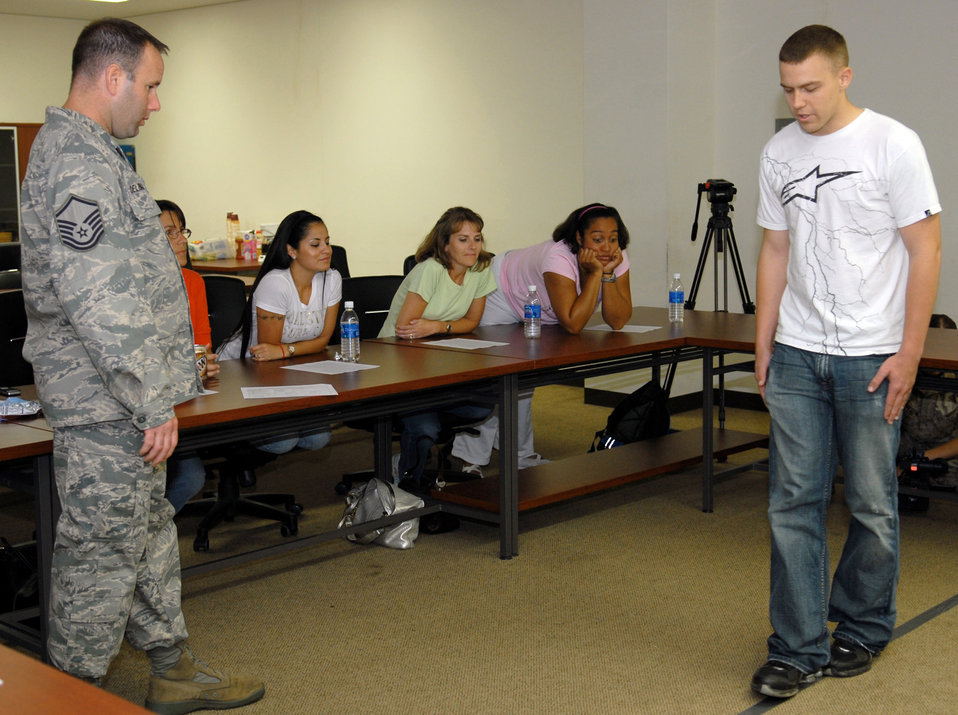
Spouses get taste of security forces' life

Master Sgt. Dan Delzingaro and Airman 1st Class Philip Sneed demonstrate standard sobriety test procedures for spouses during the civilian police academy course May 27 at Kadena Air Base, Japan. Sergeant Delzingaro and Airman Sneed are both members of the 18th Security Forces Squadron.